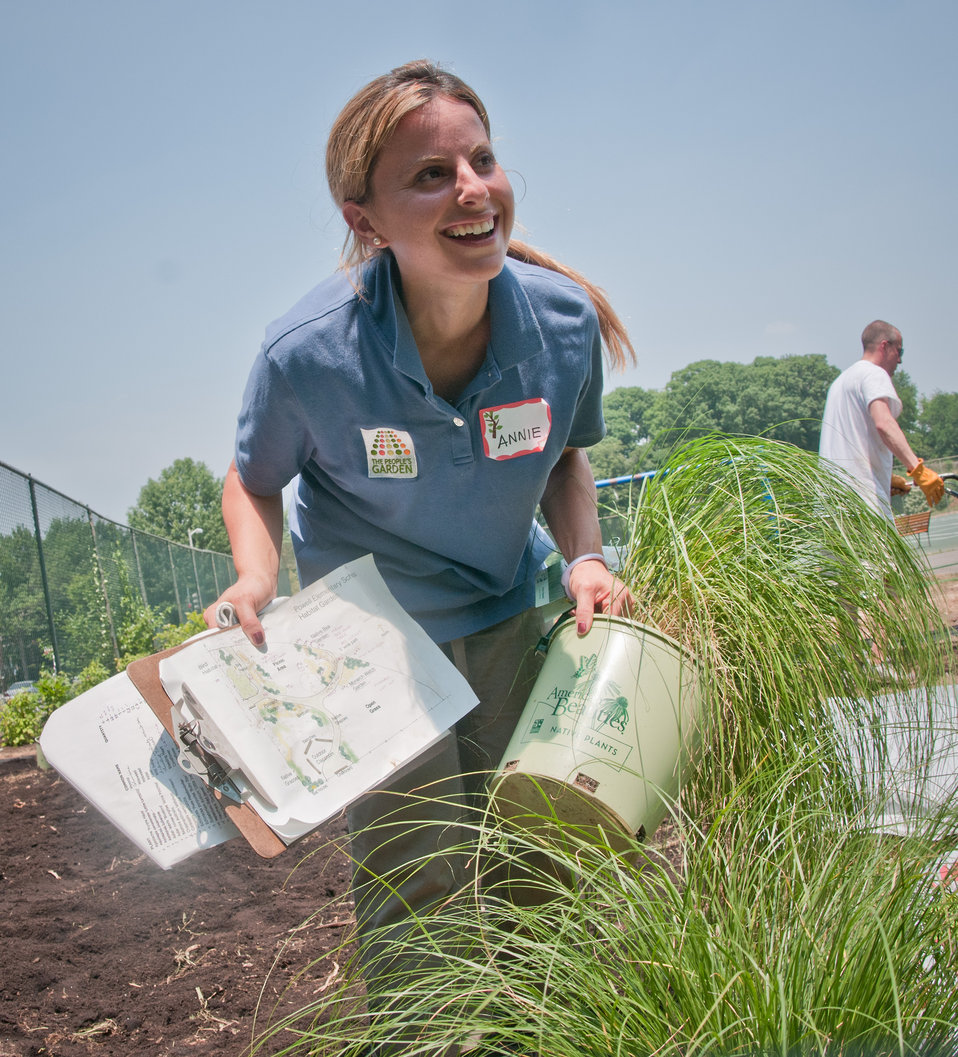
U.S. Department of Agriculture Outreach and Education Coordinator Annie Ceccarini with the master plan in one hand and a native grass plant in the other, she manages the creation of the People’s Garden, at William B. Powell Elementary School on Thursday, June 9, 2011 in Washington, DC. Volunteers from U.S. Department of Agriculture People’s Garden Executive Master Gardener program and Washington Capitals hockey organization, along with defenseman Jeff Schultz, and mascot Slapshot transformed a grassy corner of the school playground into a habitat garden and outdoor learning area. Executive Master Gardeners led the volunteer project teams. The Washington Capitals donated new tools; tool shed; garden materials; lunch; most of the volunteers and more. The completed projects included a walking path; tiling of garden plots; planting a bird habitat garden, pollinator garden and native grasses; caterpillar and butterfly plaques; hummingbird and bat house, and tool shed. The garden will later include a picnic area, outdoor classroom, hummingbird garden, Monarch watch garden, native bee garden, and birdbath. USDA challenges its employees to establish People's Gardens at USDA facilities worldwide or on this case, help communities create gardens. People's Gardens vary in size and type, but all have a common purpose - to help the community and the environment.